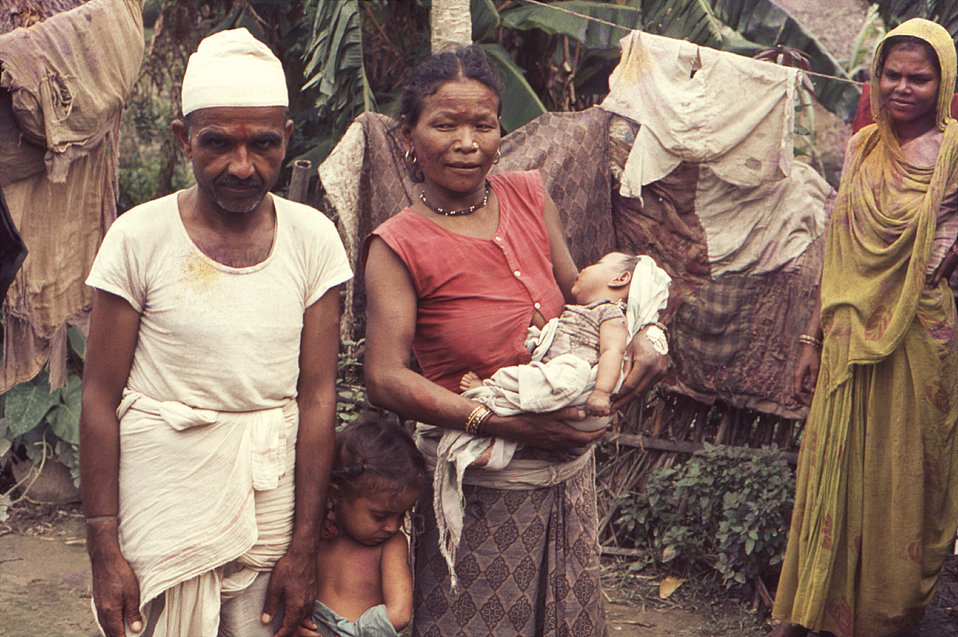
This December, 1974 photograph showed an adult female holding a very young infant who'd recently received a primary smallpox vaccination. Standing to her right, was an adult male and another small child, who appears to have received a vaccination as well. The four were inhabitants of the city of Biratnagar, Nepal, which at the time of this photograph, had sustained a smallpox outbreak. (See PHIL 10650)The Smallpox Vaccine